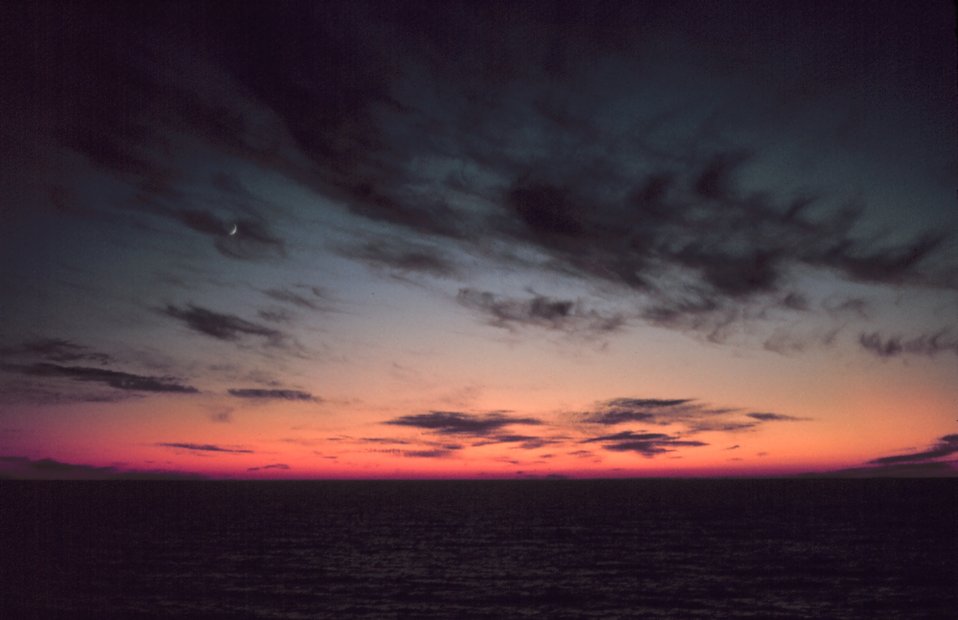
Clouds and sea at sunset.